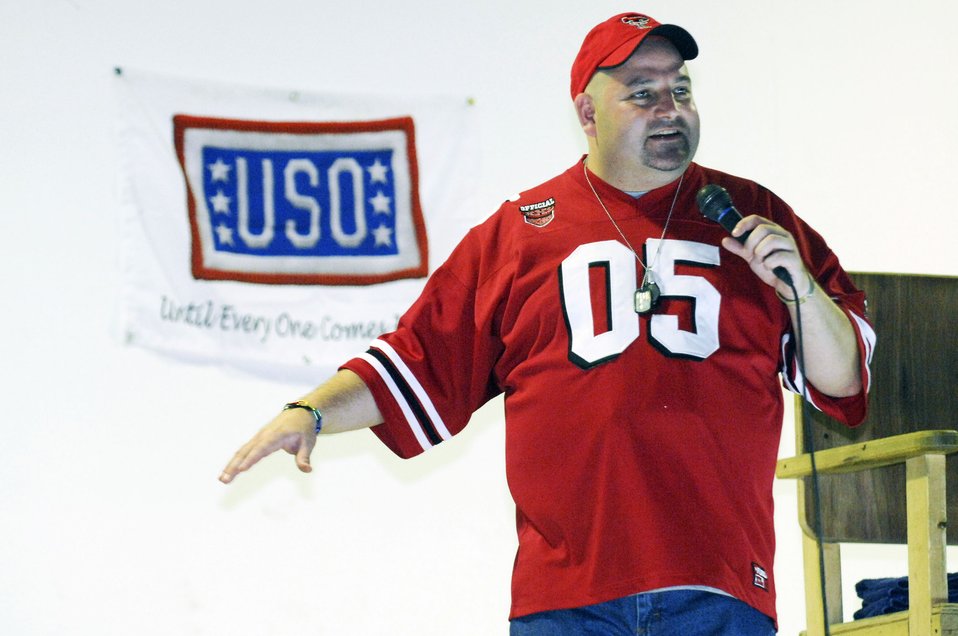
USO-sponsored show keeps 'em laughing

Scott Kennedy performs his comedy routine for more than 700 Airmen and Soldiers at a USO show July 25 at Camp Adder, Iraq. This is Mr. Kennedy's fifth USO tour in the region. He is touring with Dave Attell of Comedy Central's